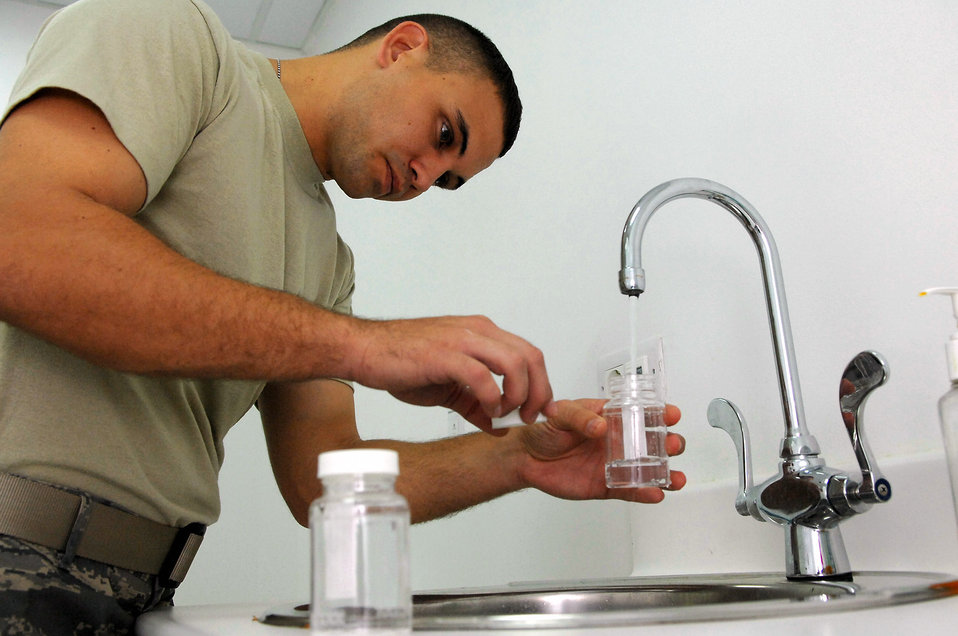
Team effort keeps Balad water supply safe

Staff Sgt. Gary Messer takes a sample of tap water for testing from the Air Force Theater Hospital March 13 at Balad Air Base, Iraq. The bioenvironmental personnel take random samples of water from many sources all over base daily to ensure its quality and safeness. Sergeant Messer, a 332nd Expeditionary Aerospace Medical Squadron bioenvironmental engineer, is deployed from Lackland Air Force Base, Texas.